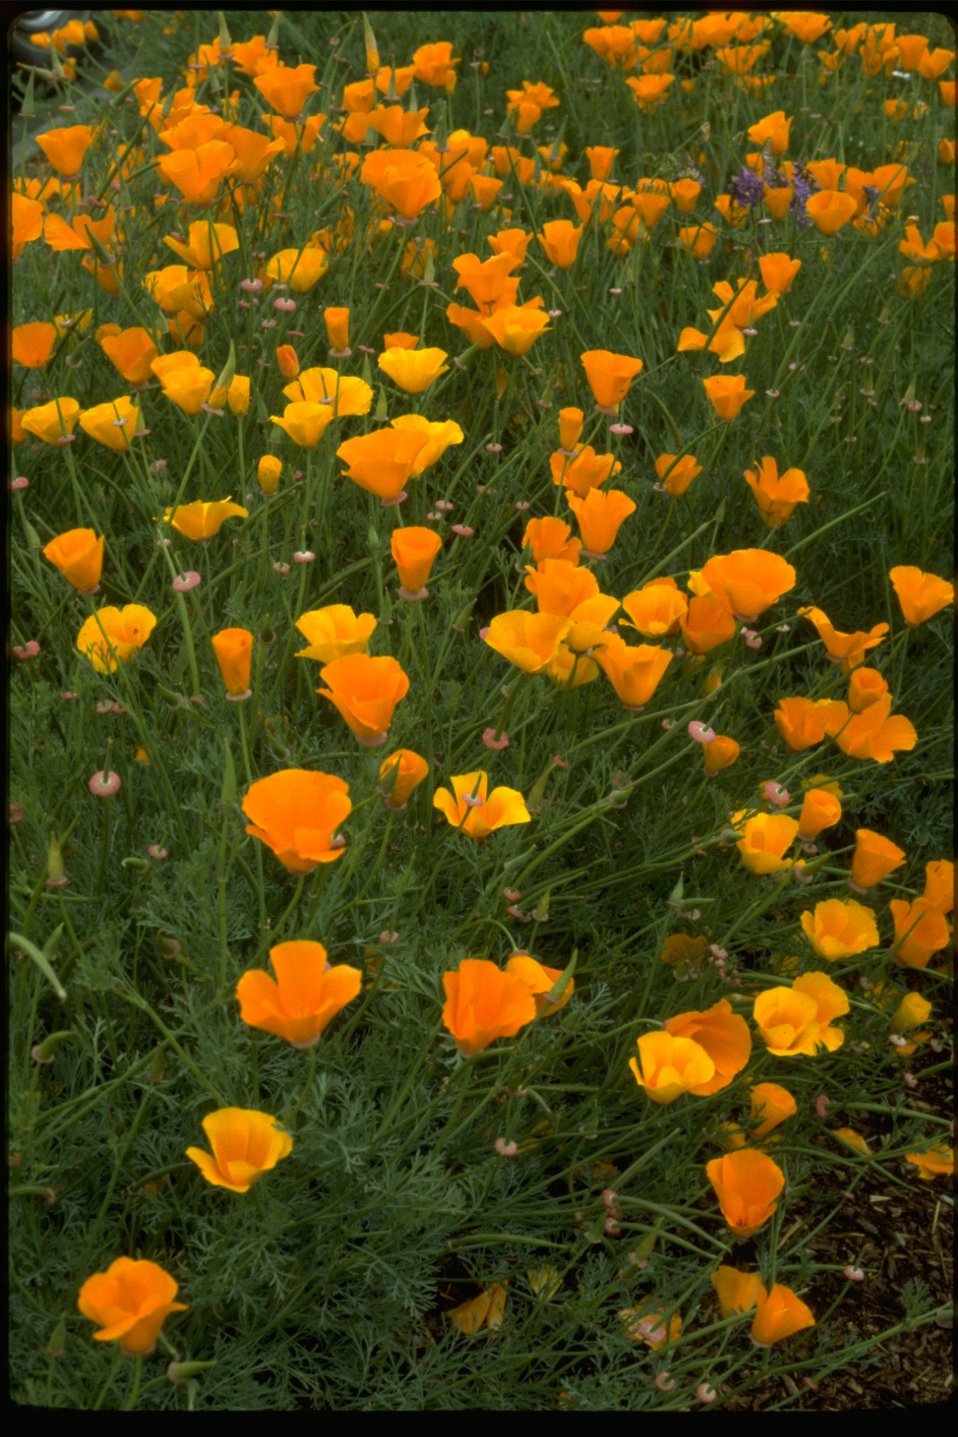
California Poppy of the genus Eschscholtzia.